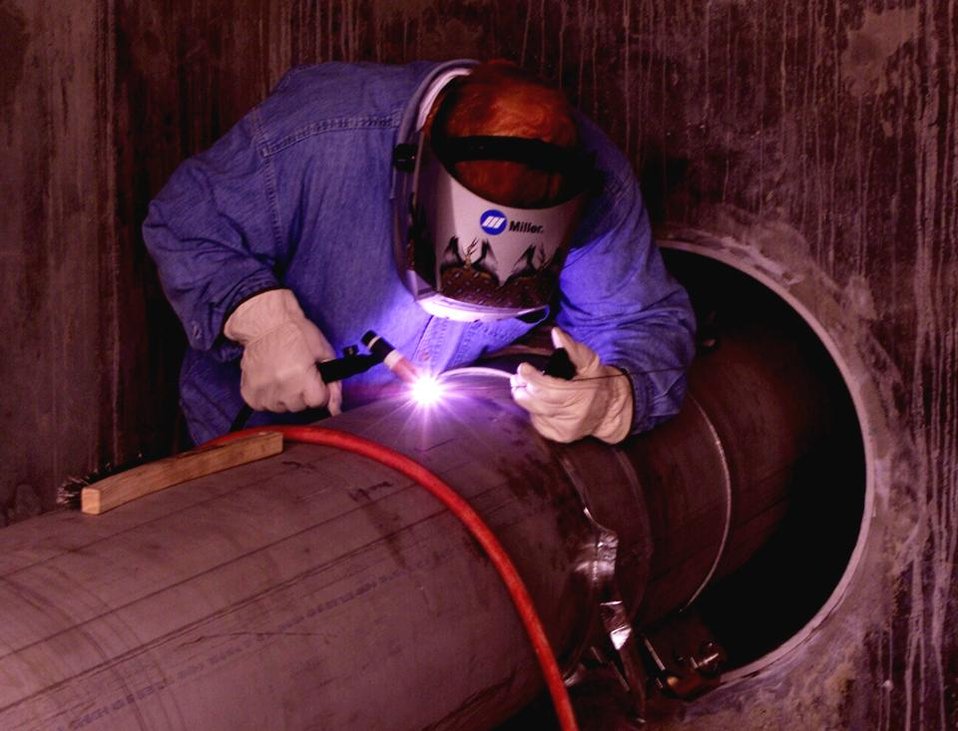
WELDING DURING THE CONSTRUCTION OF THE SPALLATION NEUTRON SOURCE AT OAK RIDGE NATIONAL LABORATORY.

A GROUP AT ORNL IS SEEKING TO INTEGRATE VARIOUS COMPUTER MODELS OF ASPECTS OF WELDING INTO ONE MODEL THAT WILL BE USEFUL TO THE WELDING INDUSTRY. USING THE COMPUTERS THE WELDING PRACTICE CAN BE REFINED AND CHANGES PREDICTED THAT COULD AVOID PROBLEMS.